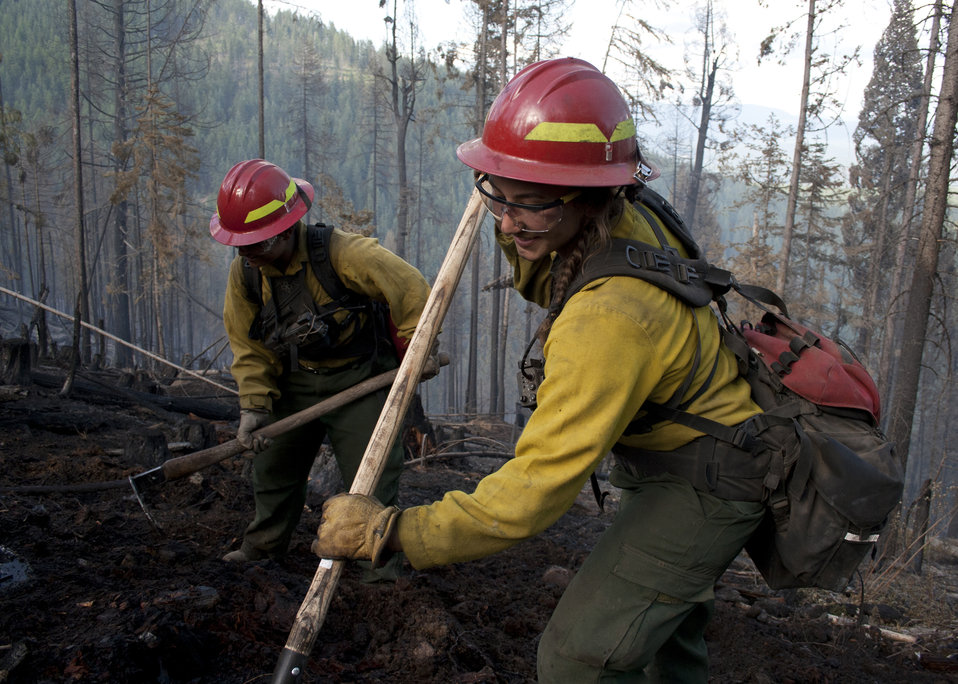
Firefighters supported by three fire engines, two helicopters, two water tenders, a dozer and an air tanker battled to contain the 90 acre Rogers Fire located on Mt. Rogers five miles west of Aladdin, WA on the Colville National Forest. Firefighters worked under adverse conditions with steep terrain and gusting winds to reduce the loss of timber and protect the Rogers Mountain Trail. The Rogers Fire began on Aug. 9, 2011 and was controlled by Aug. 19, 2011 with mop up crews ensuring that no flare-ups occurred. Colville National Forest has 1.1 million acres in northeastern Washington and includes the Kettle River, Selkirk Mountain ranges, and the upper reaches of the Columbia River.